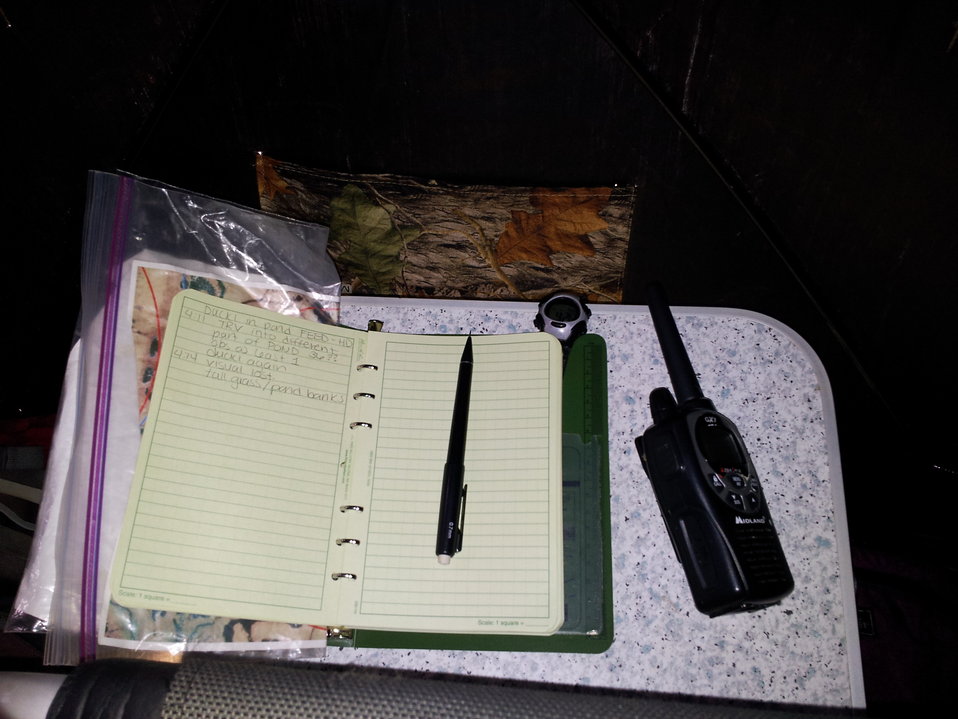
Ready for Brood Observations

Checklist of items needed to conduct brood observations include:
Tripod and scope
Binoculars
Chair
Walky talky
Notebook
Pencil
Map of tower and surrounding ponds
Watch
Lots of snacks and water
Warm clothes (can get quite chilly on windy days)

USFWS Yukon Delta NWR